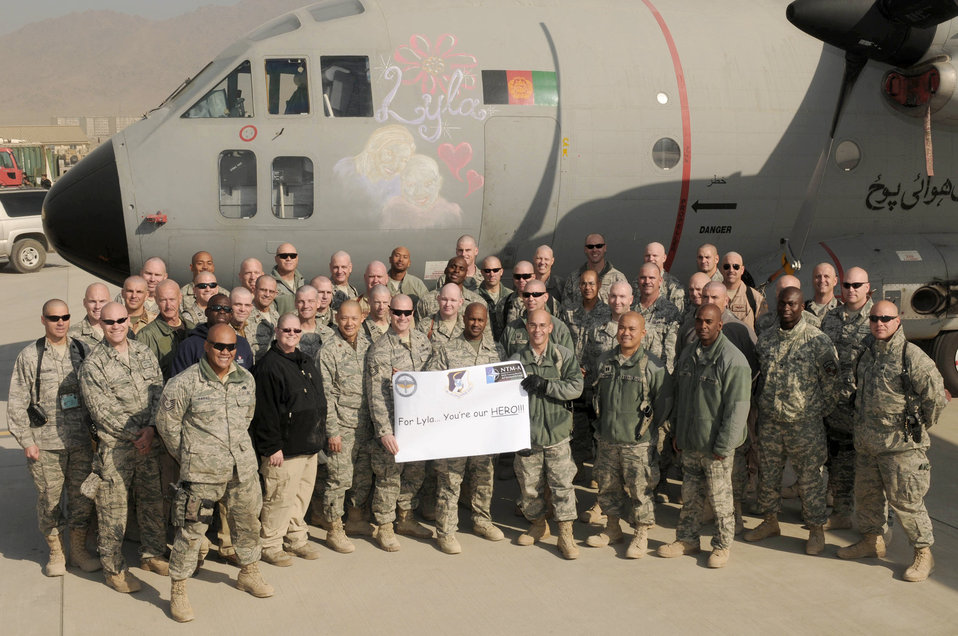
Lyla

Members of the NATO Air Training Command - Afghanistan participate in a group photo for Lyla, a cancer patient and the St. Jude's Childrens Research Hospital Dec 9, 2010.